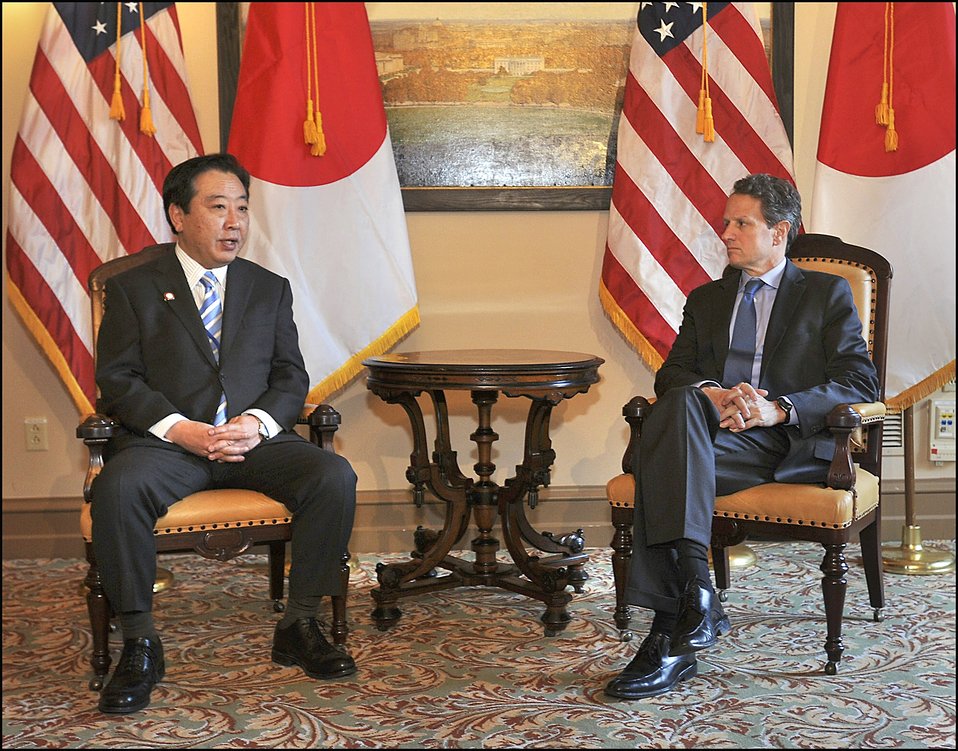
Meeting with Japanese Finance Minister Noda

On Friday, April 15, 2011, Secretary Geithner met with Japanese Finance Minister Yoshihiko Noda at Treasury.